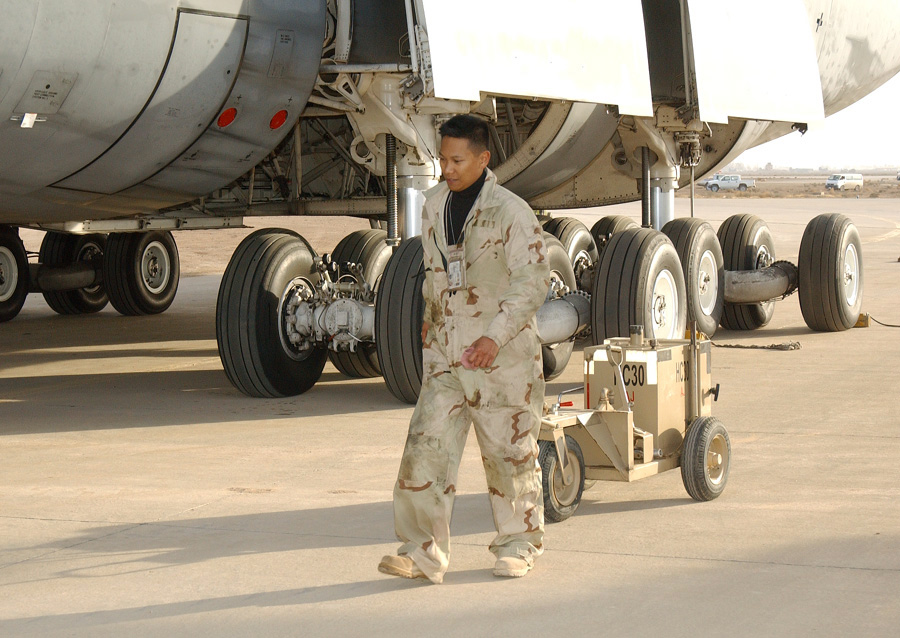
Airmen keep air flow moving at Balad

BALAD AIR BASE, Iraq -- Staff Sgt. Dale Vince Cruz pulls a hydraulic cart into place before working on a C-5 Galaxy. He is a C-5 hydraulic systems craftsman assigned to Detachment 5 of the 721st Air Mobility Operations Group.